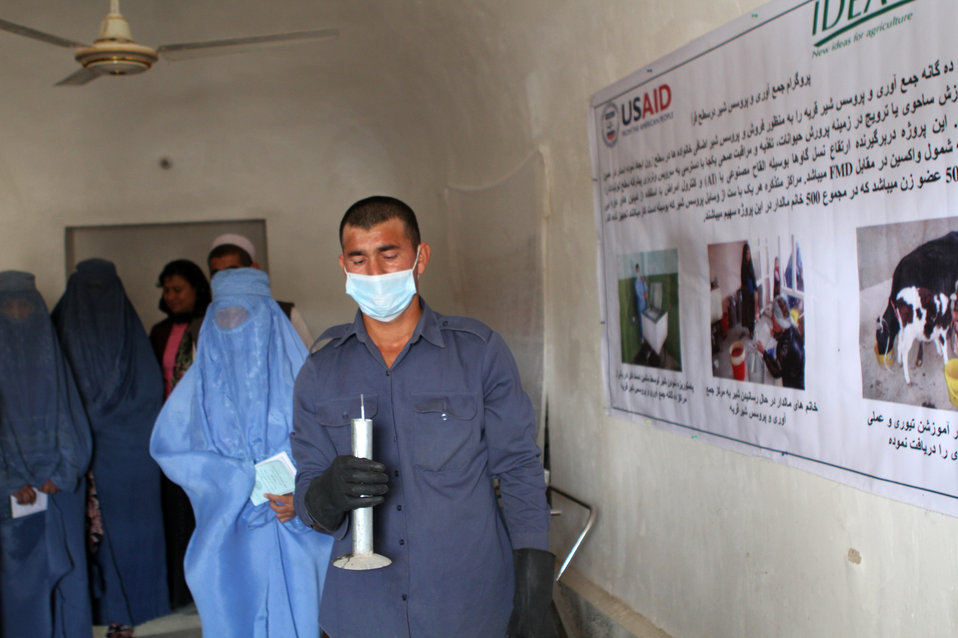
USAID funded Milk Processing Center